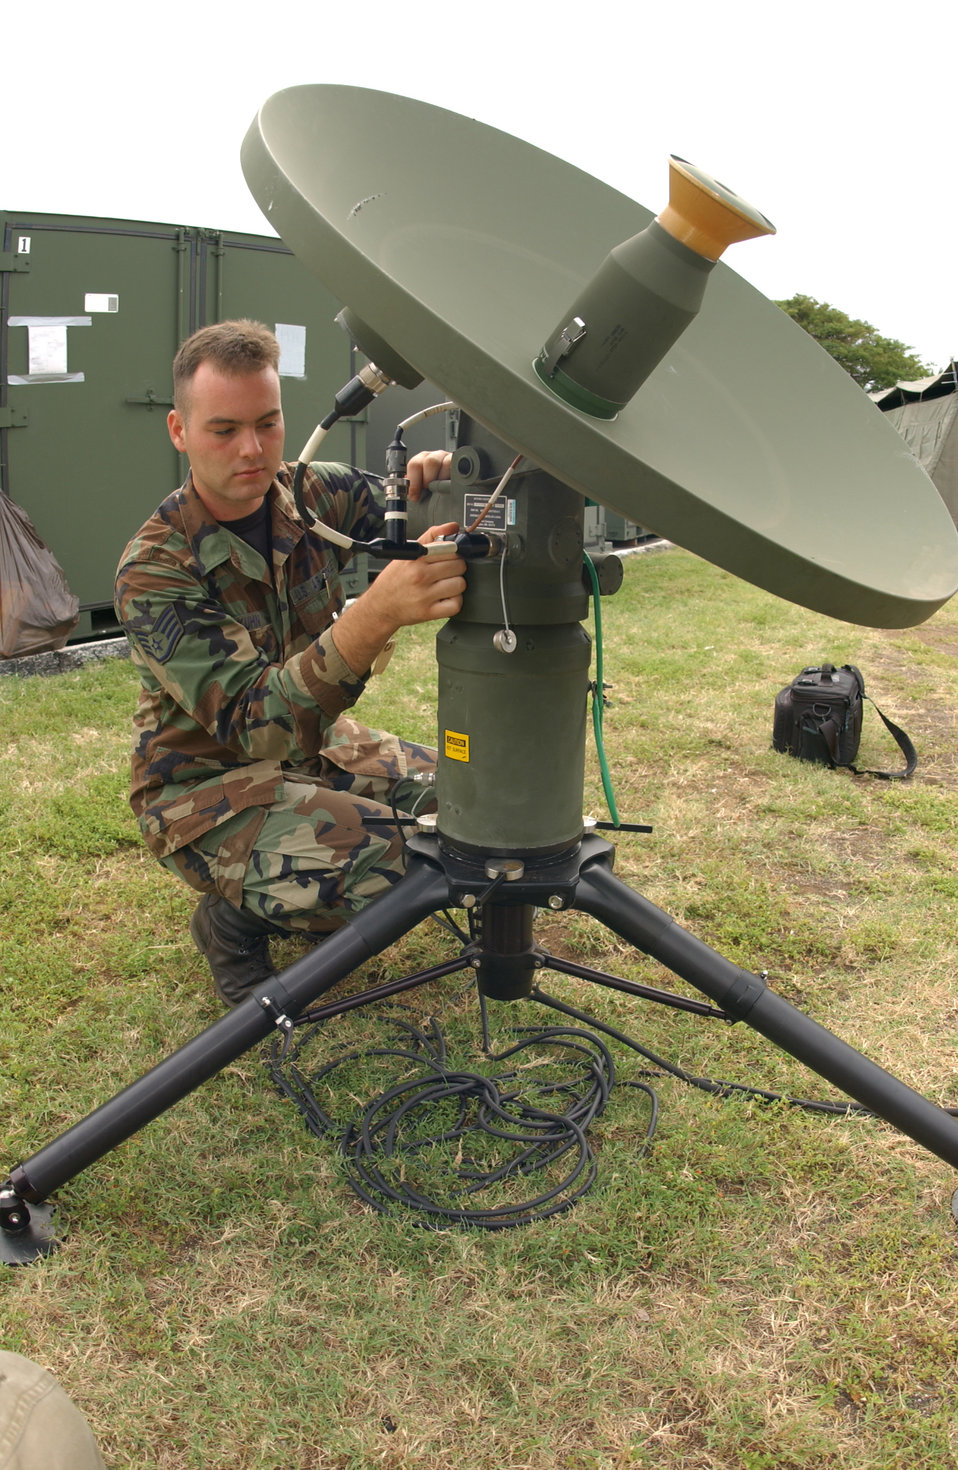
Exercise Healthy Thunder

HICKAM AIR FORCE BASE, Hawaii -- Staff Sgt. Christopher Kuhn double checks the connections of the lightweight multiband satellite terminal to maintain worldwide communications during the 56th ACOMS readiness training at Barbers Point Coast Guard Base on March 23.